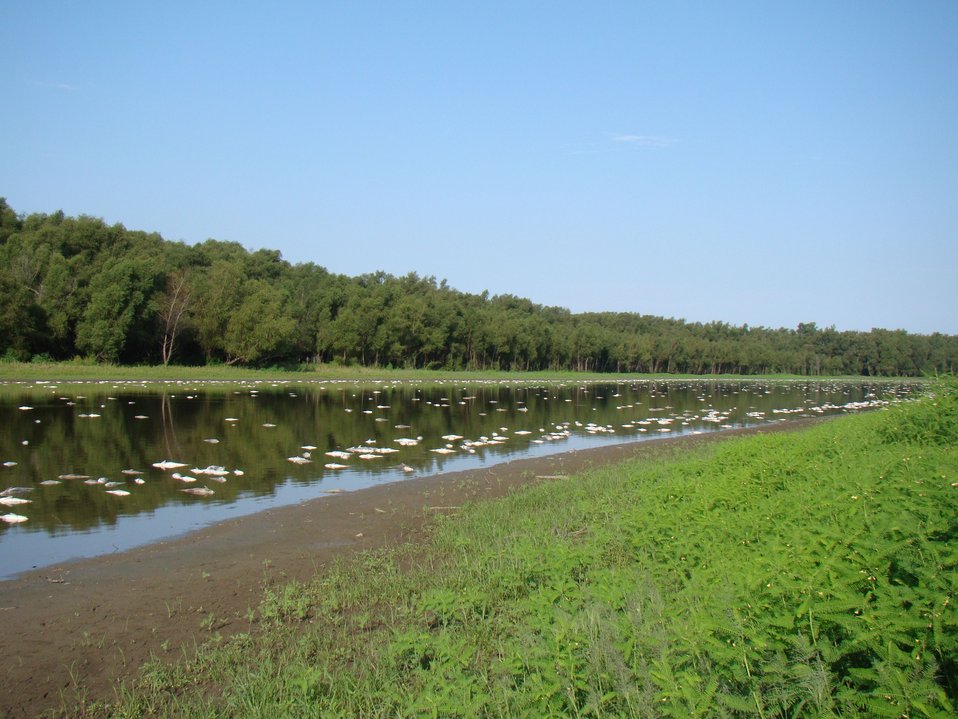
Drought fish kill, Chickasaw Refuge

A September 2012 fish kill in the Wardlow Chute of the Mississippi River at Chickasaw National Wildlife Refuge in Tennessee was one of many wildlife impacts blamed on widespread drought. (USFWS)